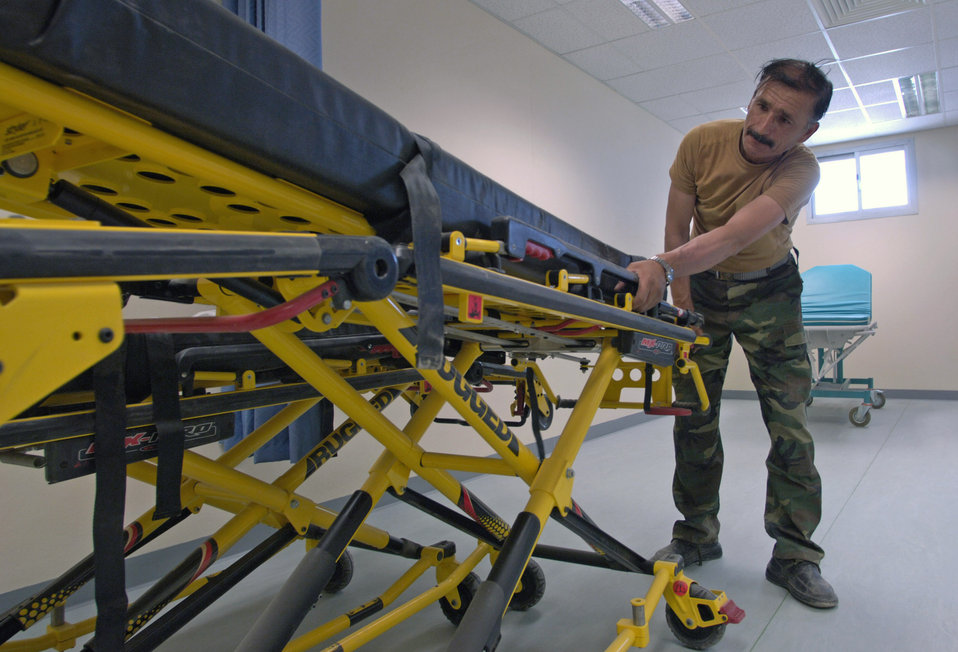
Airmen equip Afghan hospital with supplies, knowledge

Afghan National Army Maj. Abdul Ghafar inspects an ambulance stretcher Aug. 17 in the newly built $6.5 million, 50-bed ANA hospital at the ANA's Hero Camp, just outside of Kandahar Airfield in southern Afghanistan. Major Ghafar is the ANA's 205th Hero Corps warehouse commander. He is also in charge of all logistical support for the 205th.